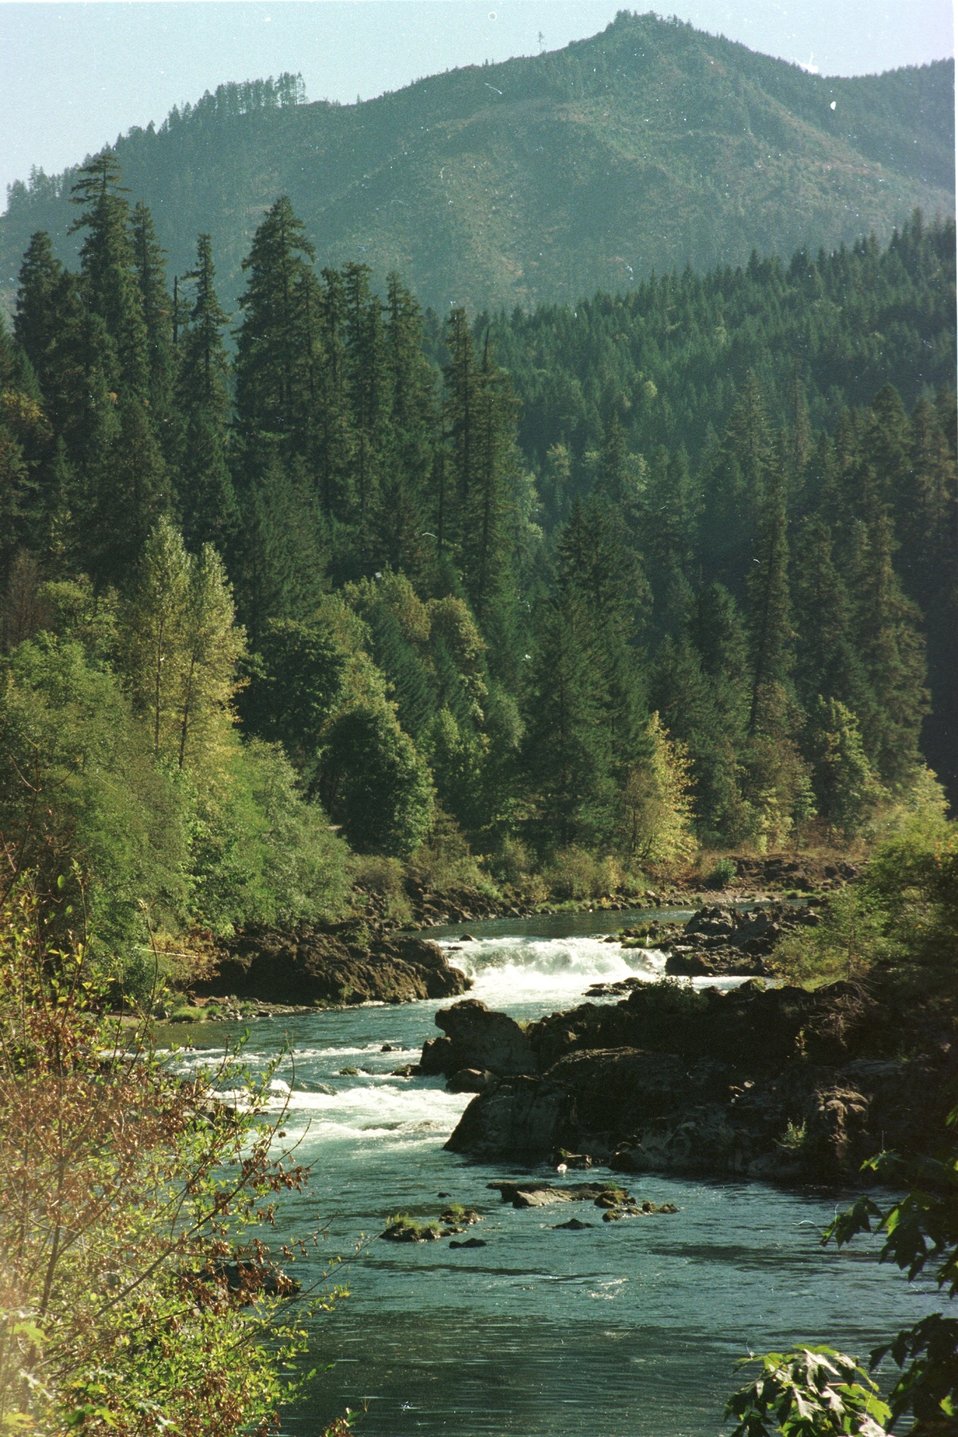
Scenic shot of a small river/stream.